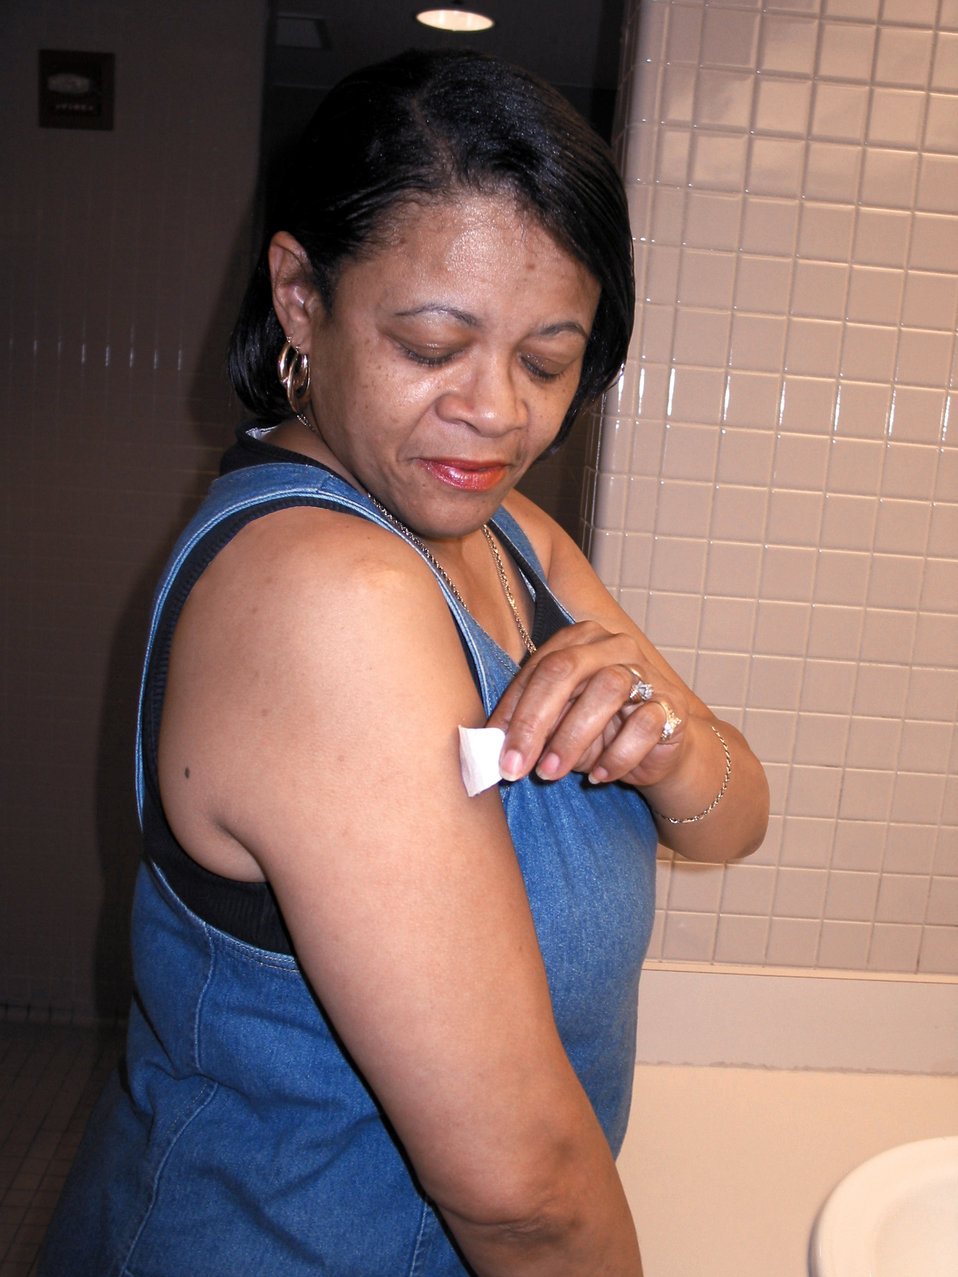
This was a demonstration of how a smallpox vaccinee should remove a waterproof bandage after taking a shower.